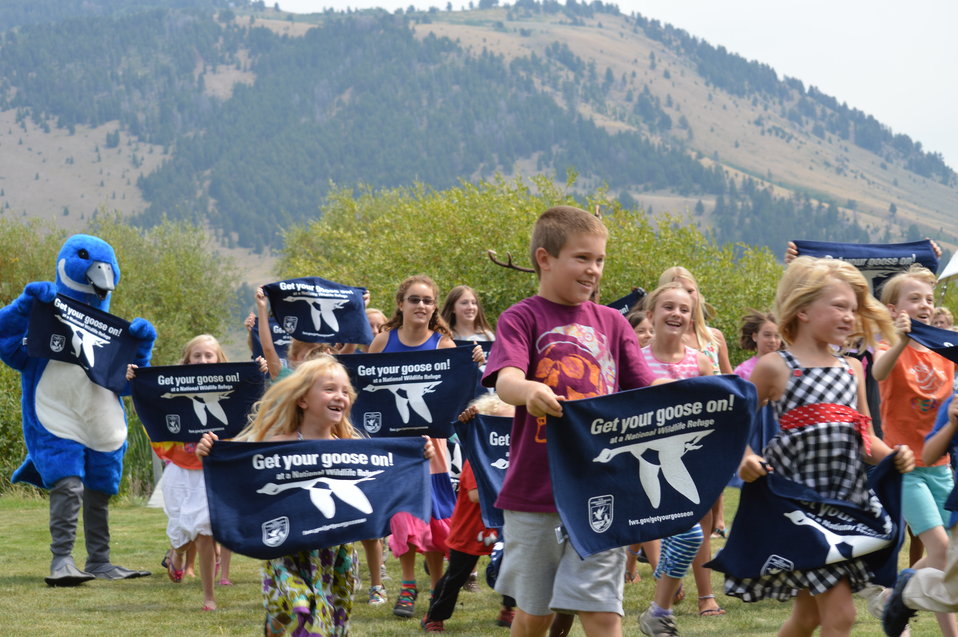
Get Your Goose On! - National Elk Refuge Style

On August 10, 2012 the U.S. Fish and Wildlife Service and Partners celebrated the 100 year anniversary of the establishment of the National Elk Refuge. In these photos, young attendees, along with Puddles the Blue Goose and the National Elk Refuge's mascot, showed us how to Get Your Goose On! with style.